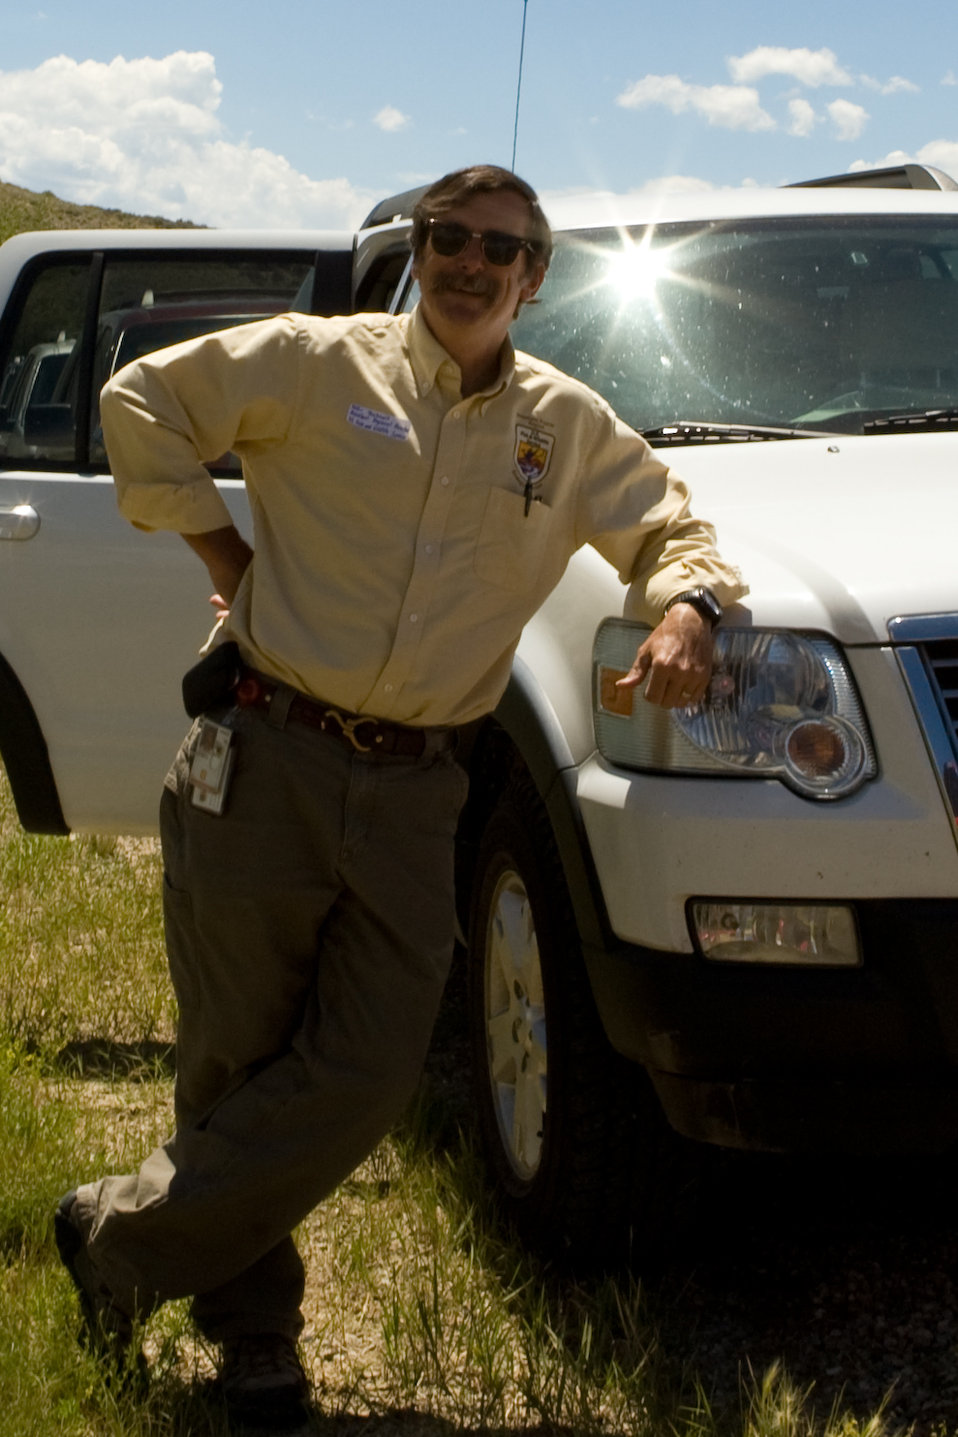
Colorado Rare Plant Conservation Initiative

The Colorado Rare Plant Conservation Initiative (RPCI) is a partnership of 23 statewide and regional agencies, private organizations, and academic institutions working to conserve 121 rare plants in Colorado. As part of these efforts the group developed the Colorado Rare Plant Conservation Strategy, developed Best Management Practices to reduce energy development impacts, addressed climate change, and developed focused strategies for the conservation of individual species at eight priority landscapes. The group has also worked to coordinate volunteer efforts for plant conservation across the state.